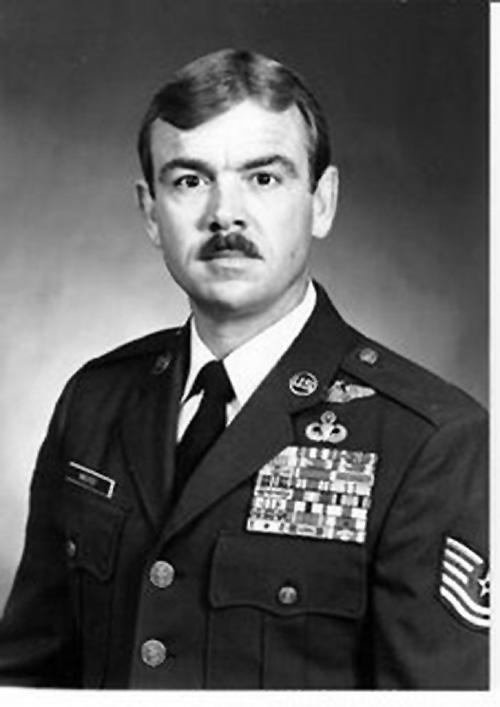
Tech. Sgt. Duane Hackney, pararescueman and recipient of the Air Force Cross.